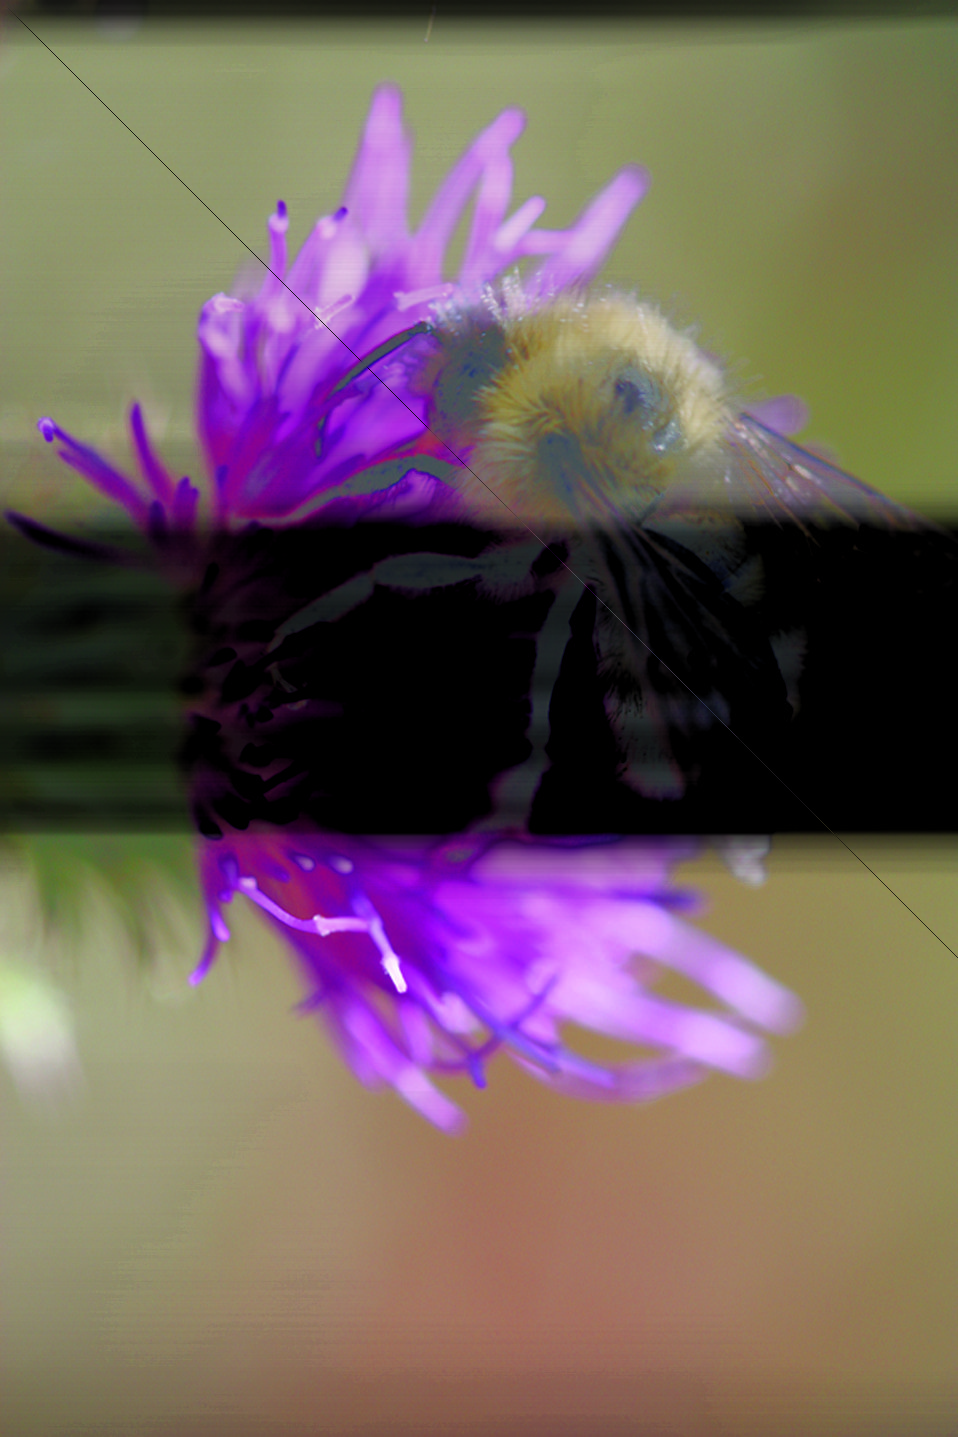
Bees are one of nature’s many pollinators for flowers and crops and are crucial in production for fruits and vegetables. Some of the crops pollinated by bees are apples, squash, and almonds. Honeybees are responsible for pollinating approximately $15 billion worth of crops in the U. S. each year. The U. S. Department of Agriculture (USDA) Agricultural Research Service (ARS) and Natural Resource Conservation Service (NRCS) are working on ways to mitigate the decline of the bee population by coordinating pollination research, conservation, and education among USDA agencies and their partners.